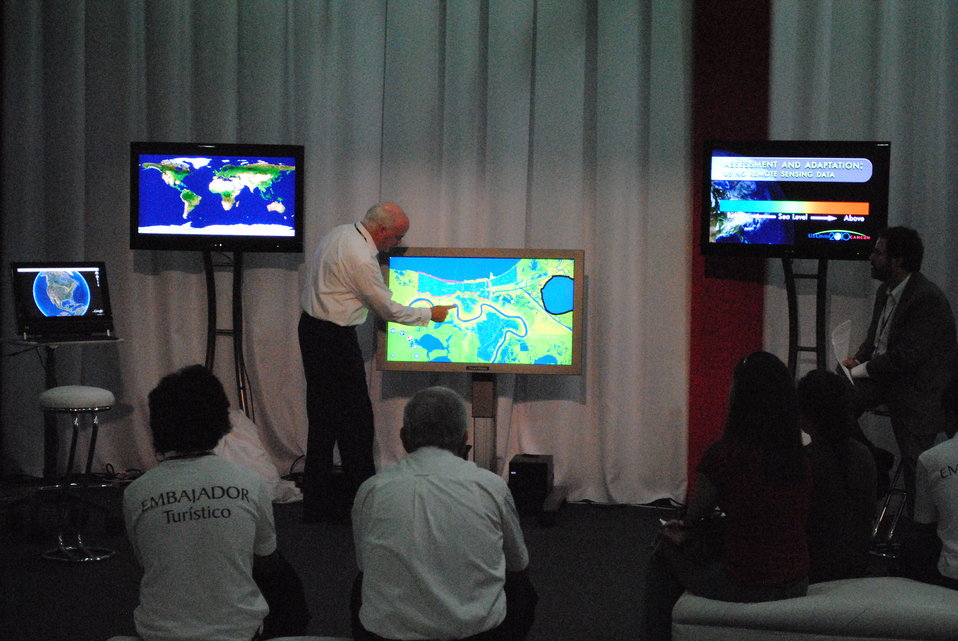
Dave Jones Presents Images of the United States From the Touch Table

Dave Jones, President and CEO of Storm Center Communications, Inc., demonstrates how climate change affects the United States on the Envirocast Vision Touch Table at the U.S. Center at COP-16 in Cancun, Mexico, on December 1, 2010.